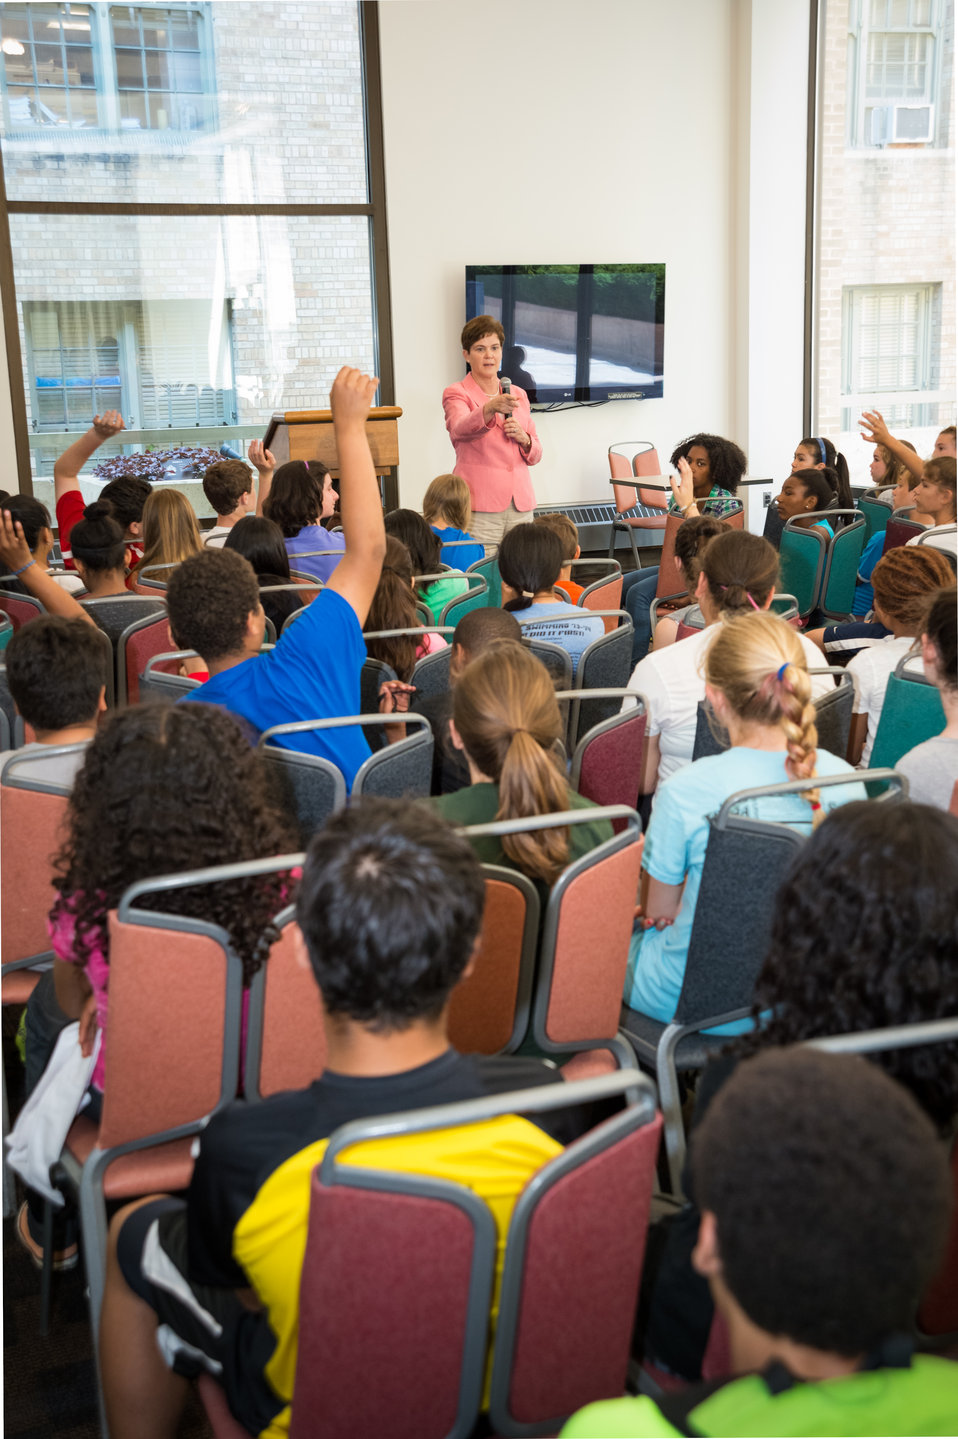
Agriculture Deputy Secretary Krysta Harden speaking with students from the Alice Deal Middle School, Washington, DC students during their visit to the United States Department of Agriculture (USDA) in Washington, DC, Wed. Jun. 4, 2014. The students studied hunger, food security, how to prevent hunger and organizations involved in solving hunger situations nationally and worldwide. A lot of what they learned is administered through the USDA.